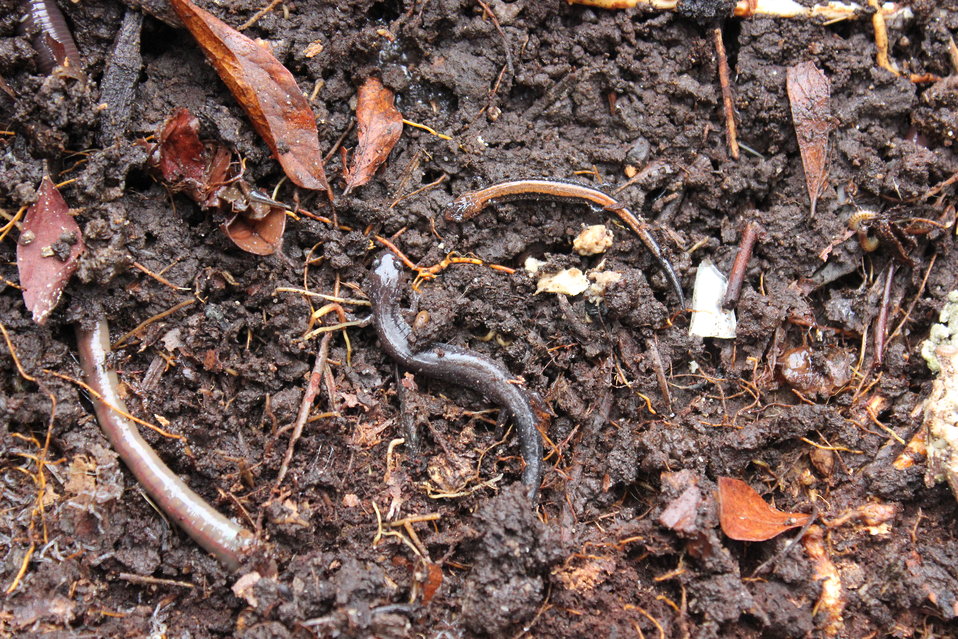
Salamanders

Photographed at Wertheim National Wildlife Refuge.